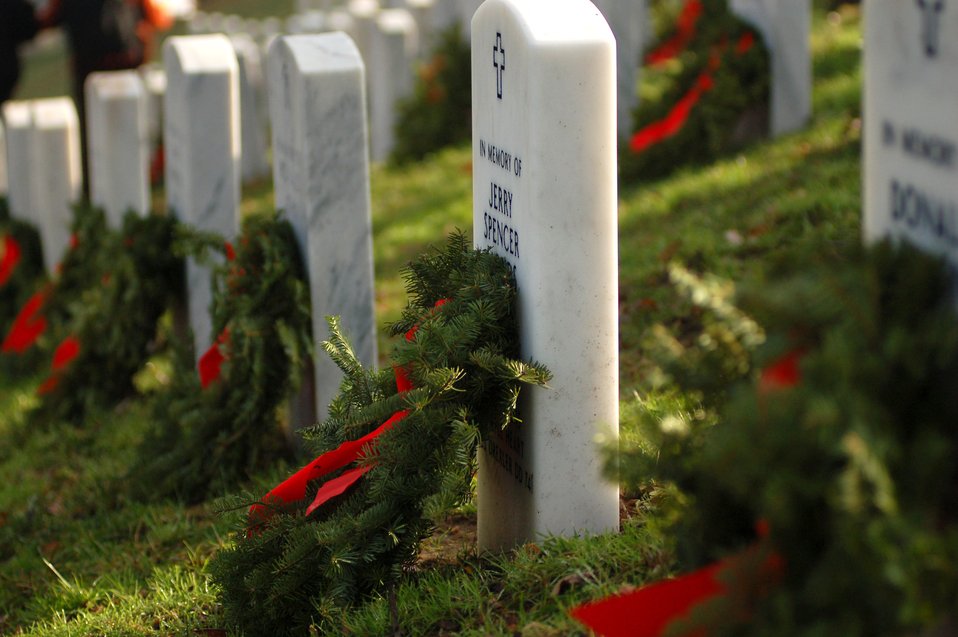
Not forgotten

A wreath leans against a grave Dec. 14 at Arlington National Cemetery, Va. Fourty-four Dover Air Force Base, Del., Airmen along with hundreds of other volunteers lead 5,000 wreaths in Section 3 of the cemetery to honor servicemembers who have passed away.